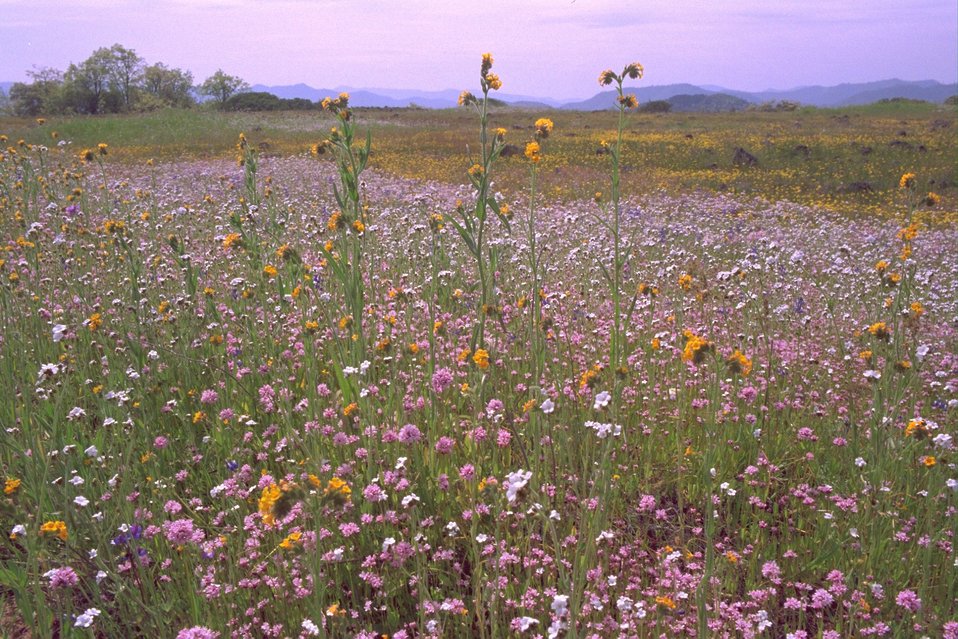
Flowerscape, at the top of Lower Table Rock, includes Fiddleneck (tall, orange flower), Popcorn Flower (white), and Rosy Plectritis.